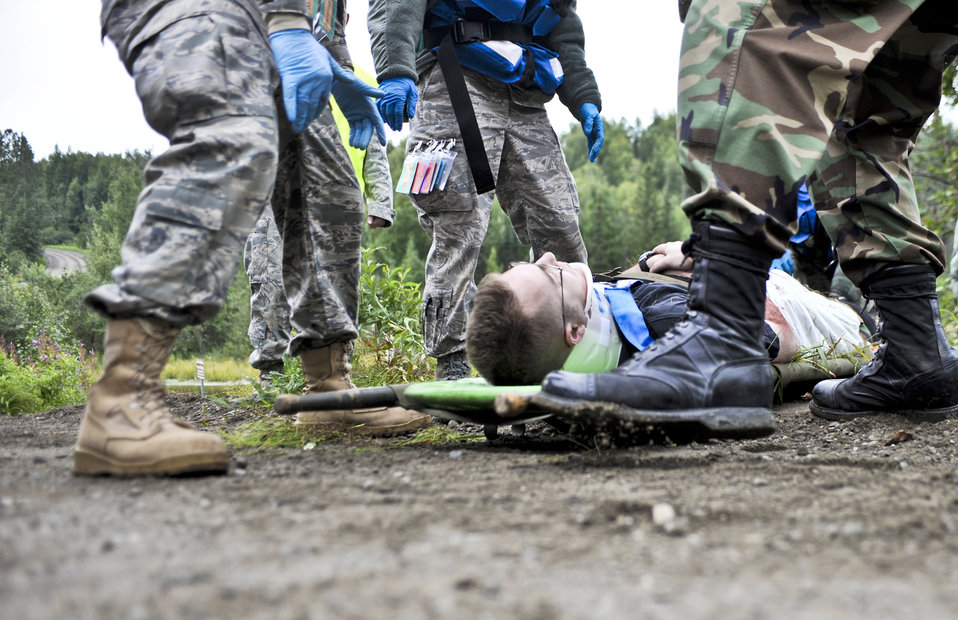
EMED training a first at JBER

Airmen prepare to transport a